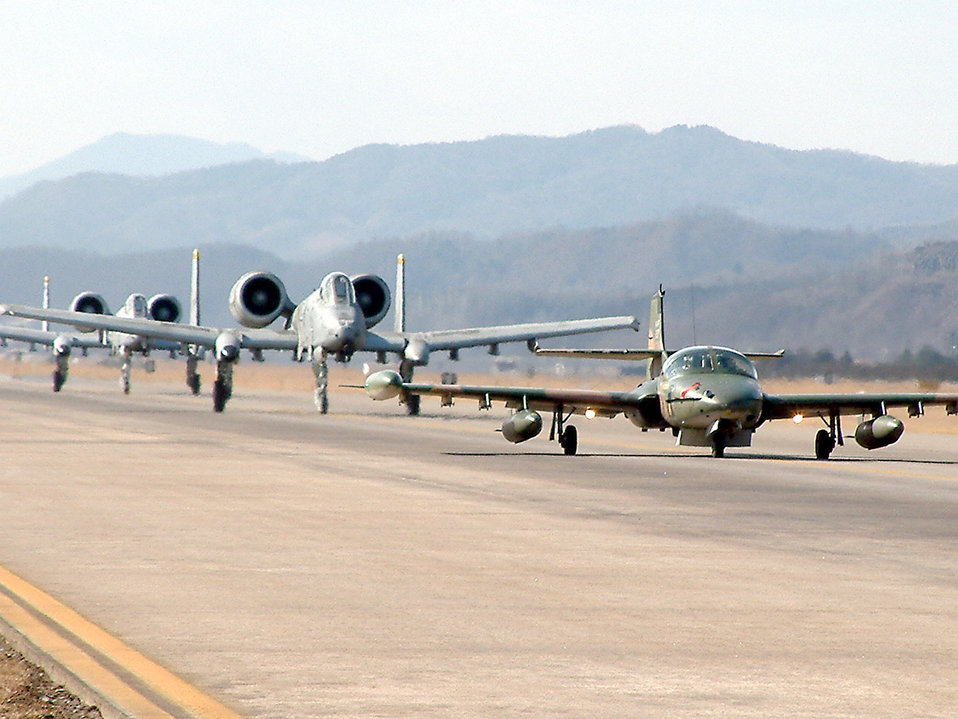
Follow the leader

WONJU AIR BASE, South Korea -- A South Korean air force A-37 leads two A-10 Thunderbolt IIs from the 25th Fighter Squadron at Osan Air Base, South Korea, down the taxiway here. Pilots from the 25th FS along with 10 maintainers and a five-person security forces team took part in an exercise that focused on forward-air control and coordinating command and control of multinational forces.